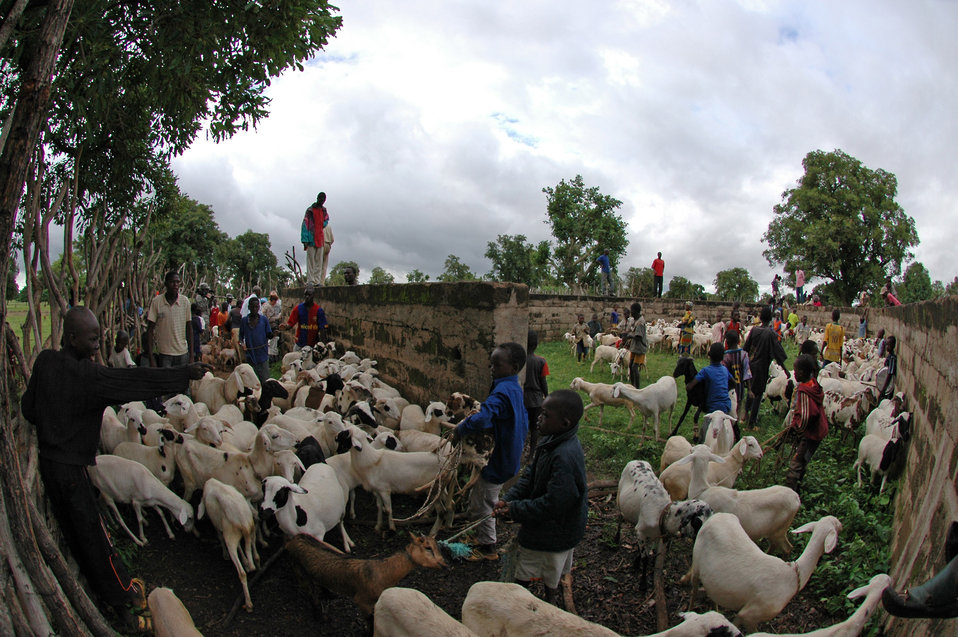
Servicemembers treat 8,100 patients, livestock in Mali

Malian herders funnel sheep and goats into a corral to be seen by American veterinarians July 21 in a village outside of Bamako, Mali. More than 4,000 sheep were dewormed and vaccinated during a series of humanitarian and outreach assistance in villages outside of Bamako. More than 90 servicemembers deployed to Mali for the medical training exercise to enhance medical capabilities and readiness for U.S. and African forces.